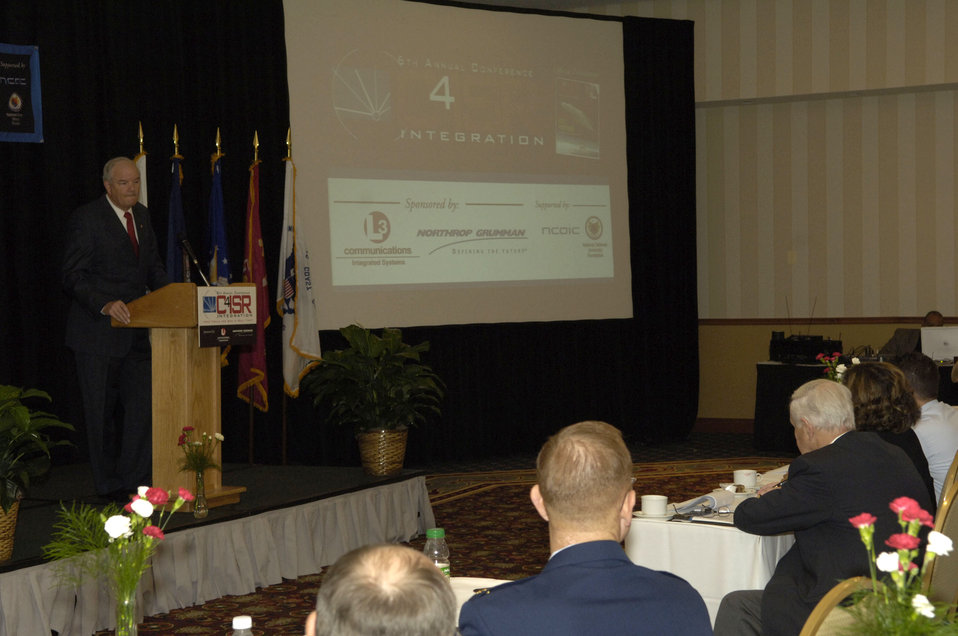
8th Air Force to become new cyber command

Secretary of the Air Force Michael W. Wynne announces that 8th Air Force would become the new Air Force Cyberspace Command at the 6th Annual C4ISR Integration Conference in Crystal City, Va., Nov. 2. Cyberspace Command will be led by Lt. Gen. Robert J. Elder Jr.